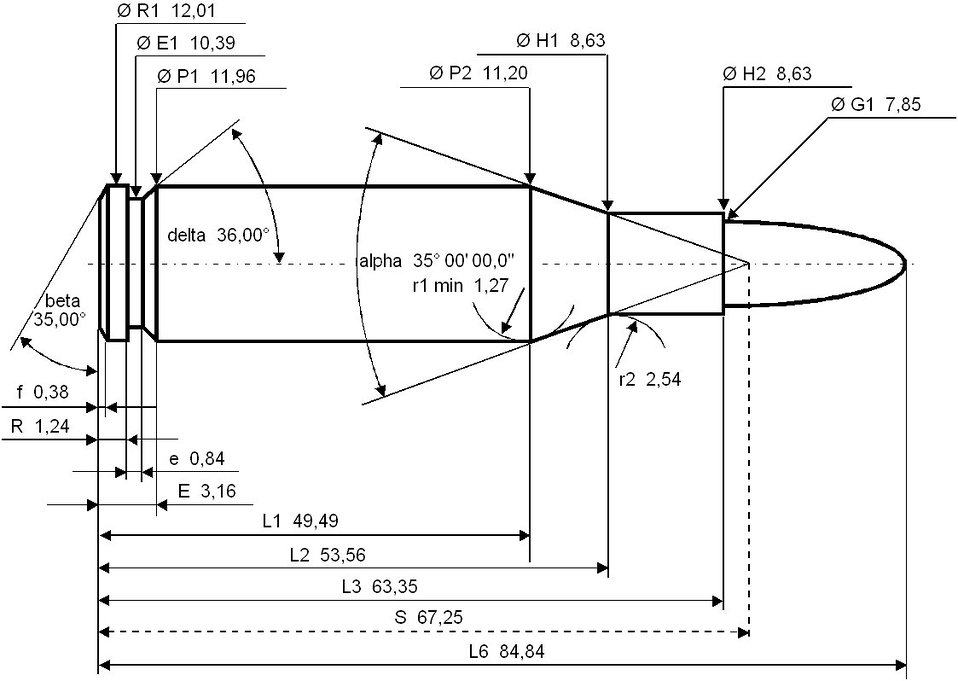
.30-06 Springfield maximum C.I.P. cartridge dimensions. All sizes in millimeters (mm)